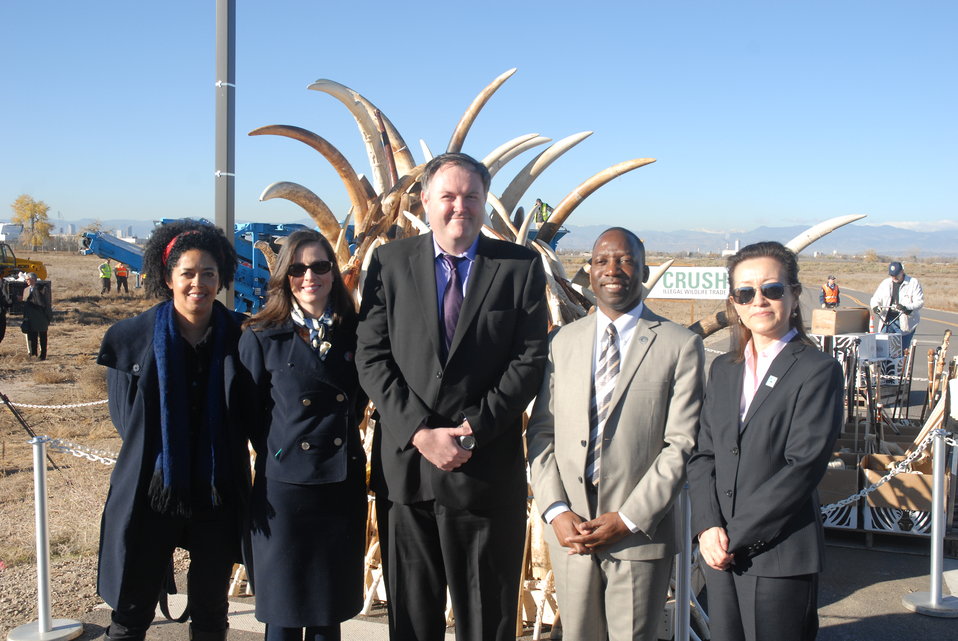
Elephant experts and representatives from several non-government organizations gather before the start of the U.S. ivory crush.

From left to right: Dr. Paula Kahumbu (WildLife Direct), Kelly Keenan-Aylward (Wildlife Conservation Society), Crawford Allan (TRAFFIC), Jimmiel Mandima (African Wildlife Foundation), and Grace Gabriel (International Fund for Animal Welfare).